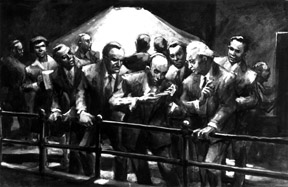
Artist's rendition of the CP-1 experiment, Dec. 2, 1942.